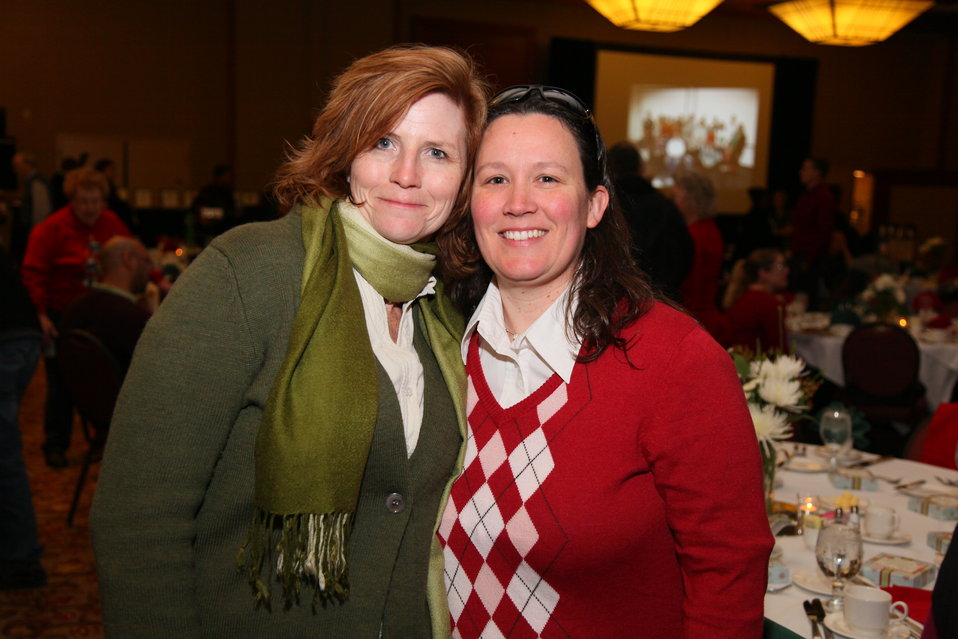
Sacramento District Holiday Party 2011